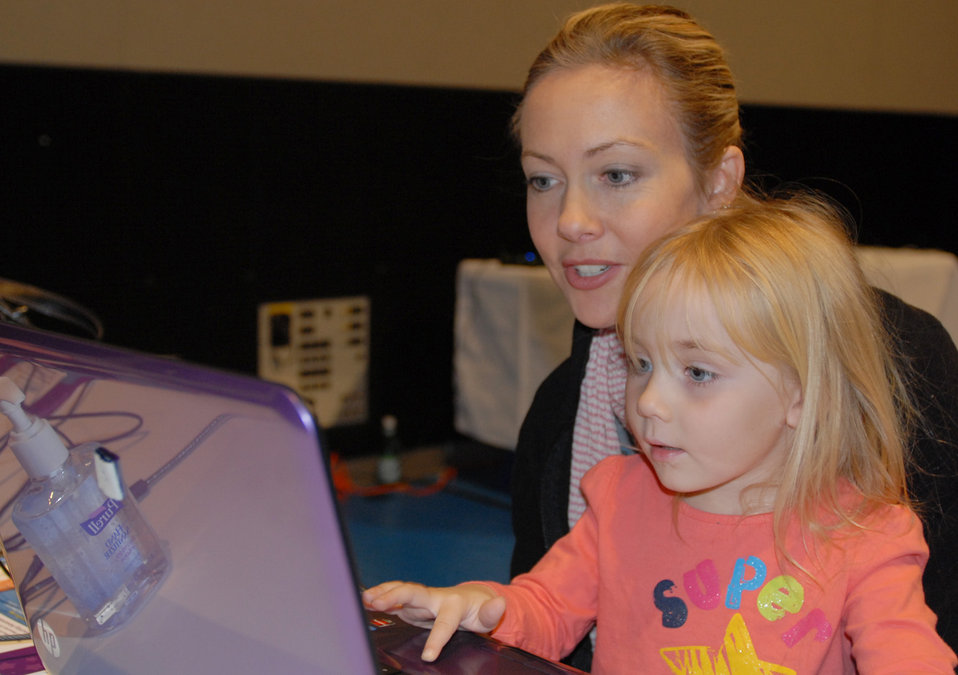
Sesame launches new resources for military families

Vicki Diesing and her daughter try out Sesame Workshop’s new Military Families Near and Far website Nov. 5, 2011, during an event at Joint Base Myer-Henderson Hall, Va. The site will enable Diesing’s daughters to stay in touch with their father, who is deployed in Iraq.